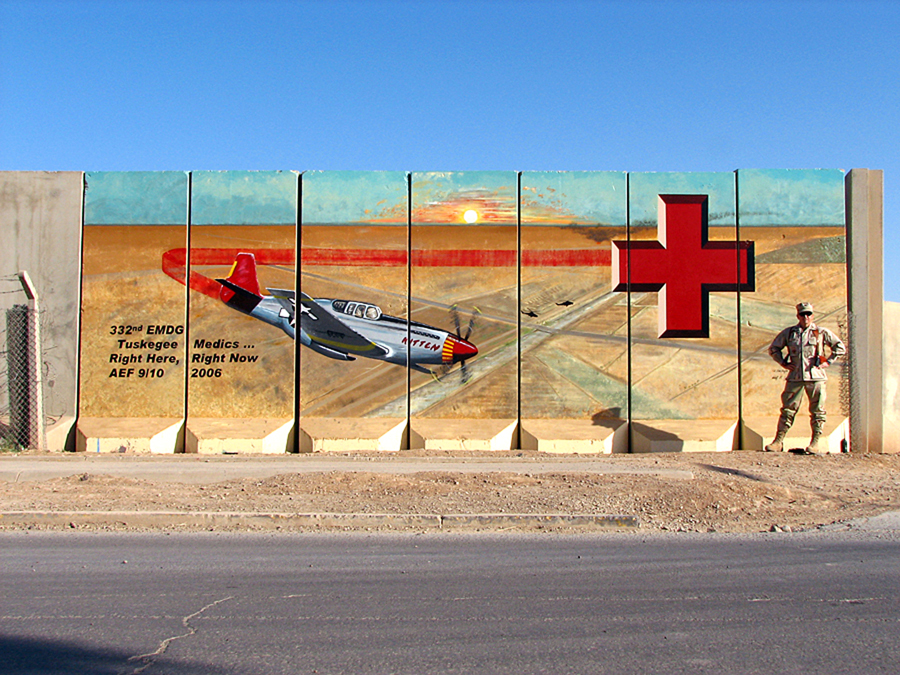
Barrier art creates bold statement at medical group

Col. Don Taylor, 332nd Expeditionary Medical Group commander at Balad Air Base, Iraq, stands in front of the Air Force Theater Hospital's